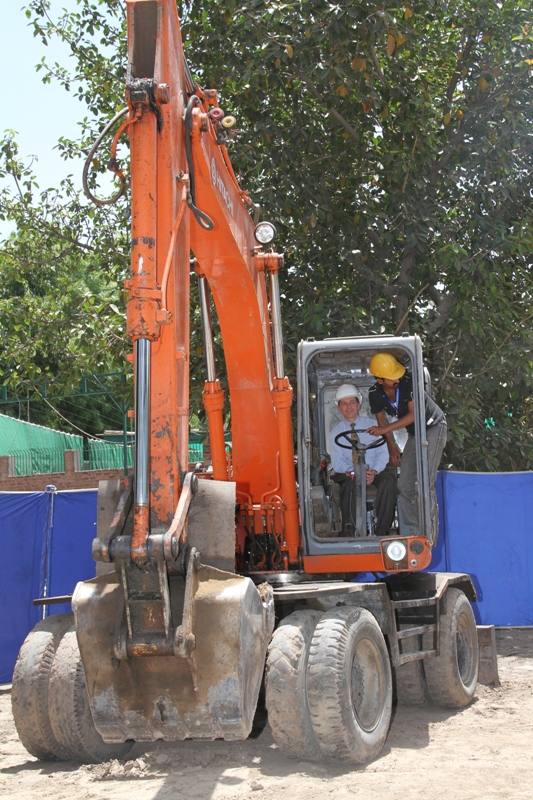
Dr. Andrew Sisson operated an excavator in breaking ground on this $6 million (543,600,000 Rs) construction project